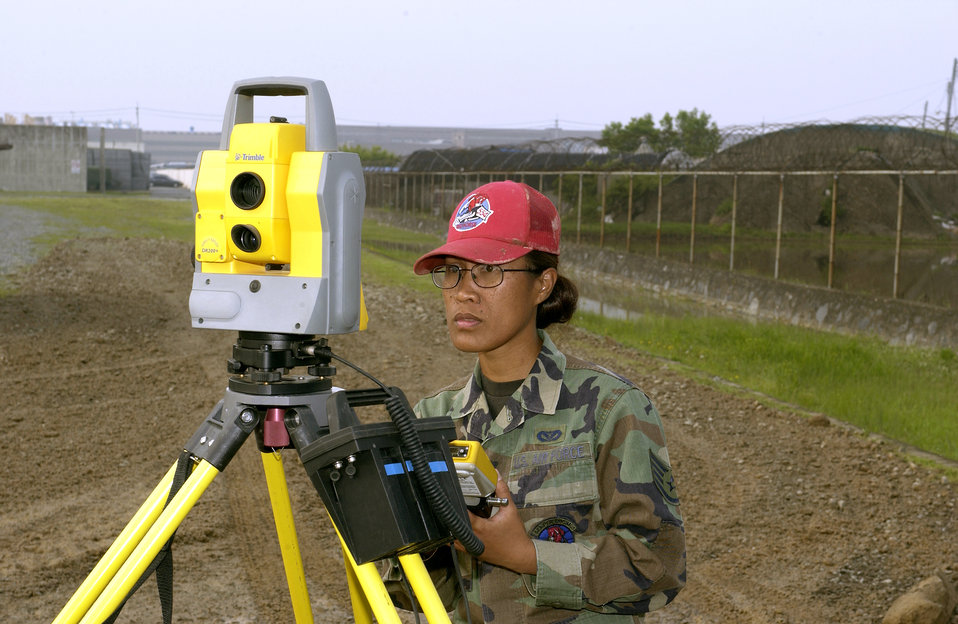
Red Horse squadrons unite in the fight

Staff Sgt. Celeste Perry uses surveying equipment at a construction site in Kimhae, South Korea, on Wednesday, May 24, 2006. Airmen from Red Horse squadrons at Nellis Air Force Base, Nev.; Barksdale AFB, La.; Andersen AFB, Guam, and Osan Air Base, South Korea, are working through September on various quality-of-life improvement projects in South Korea. Sergeant Perry is with Osan's 554th Red Horse Squadron.